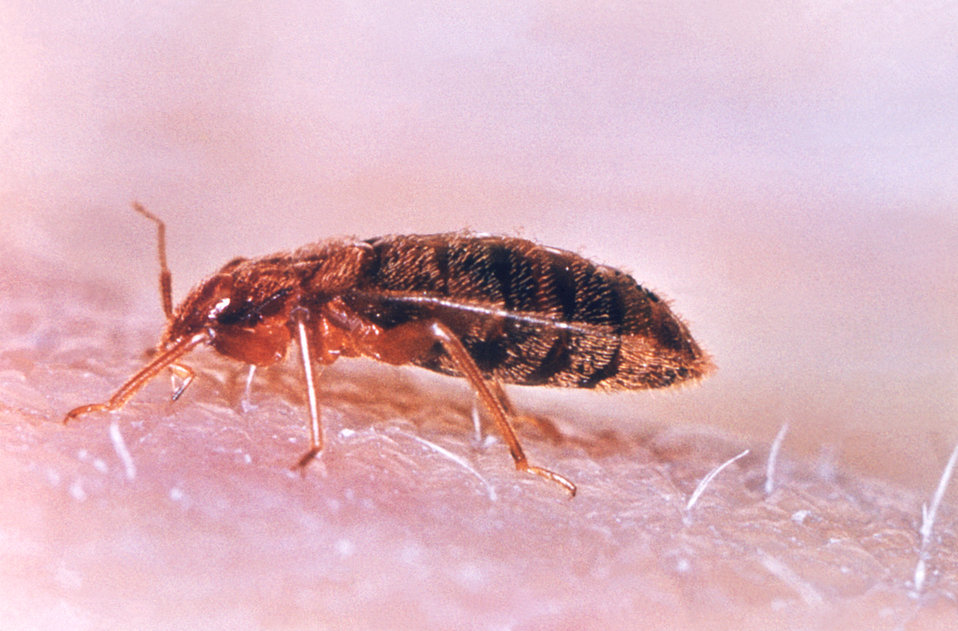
This 'common bedbug" Cimex lectularius, uses its mouth parts adapted to piercing skin in order to obtain its blood meal.